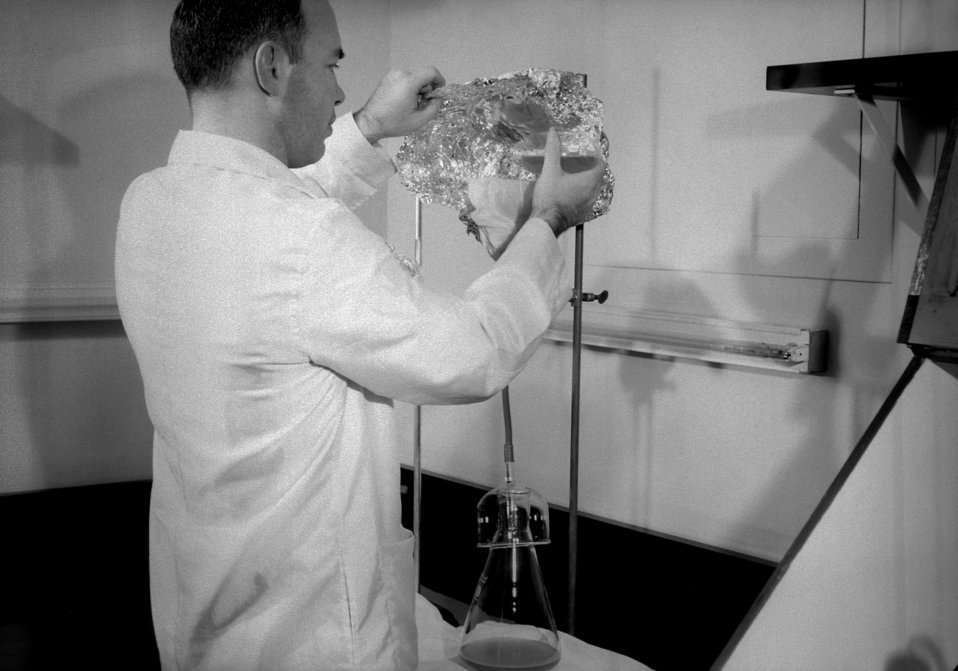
A 1967 photograph of a Lab technician working with cell samples.